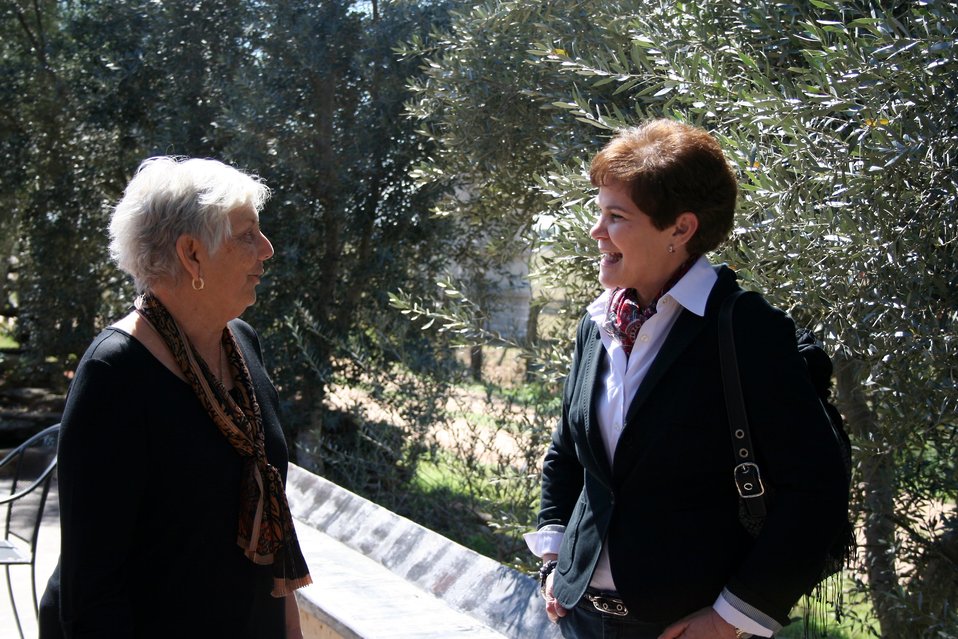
Agriculture Deputy Secretary Krysta Harden visits Sandy Oaks Olive Orchard owner Sandy Winokur in Elemendorf TX on Friday, Feb. 28, 2014.